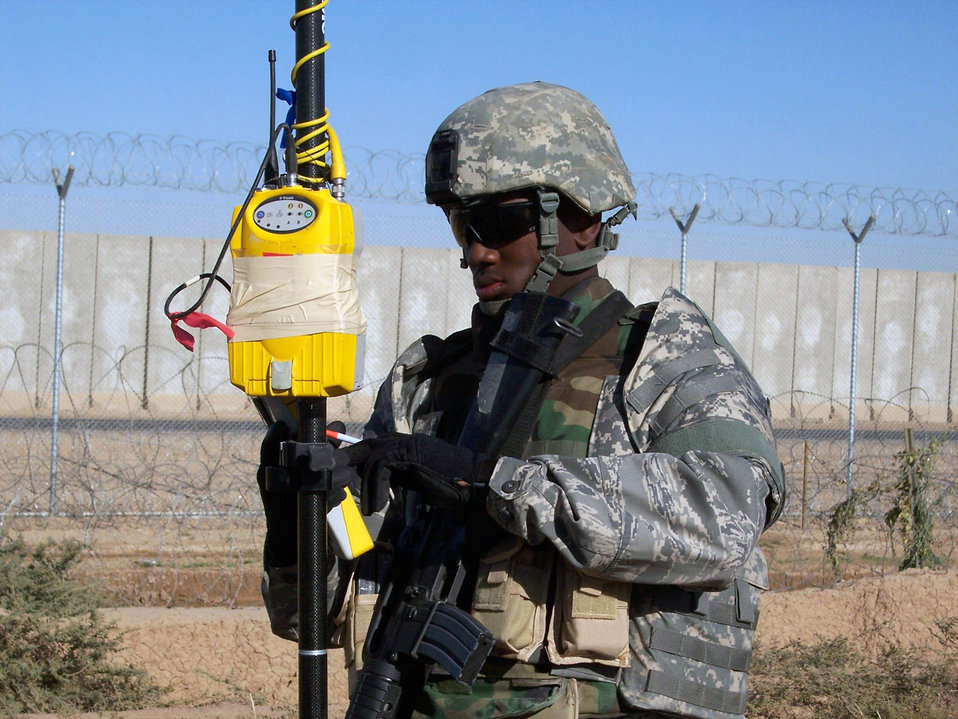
Engineering assistants help FOB quality of life

Senior Airman Renardo Sanders conducts a topographical survey Jan. 7 of the levee just outside of the perimeter fence on the west side of Balad Air Base, Iraq. The data collected is used by the levee repair team in stopping base flooding and to provide 500,000 gallons of water to Iraqi farm land. Airman Sanders is a 732nd Expeditionary Civil Engineering Squadron engineering assistant, deployed from Beale Air Force Base, Calif.